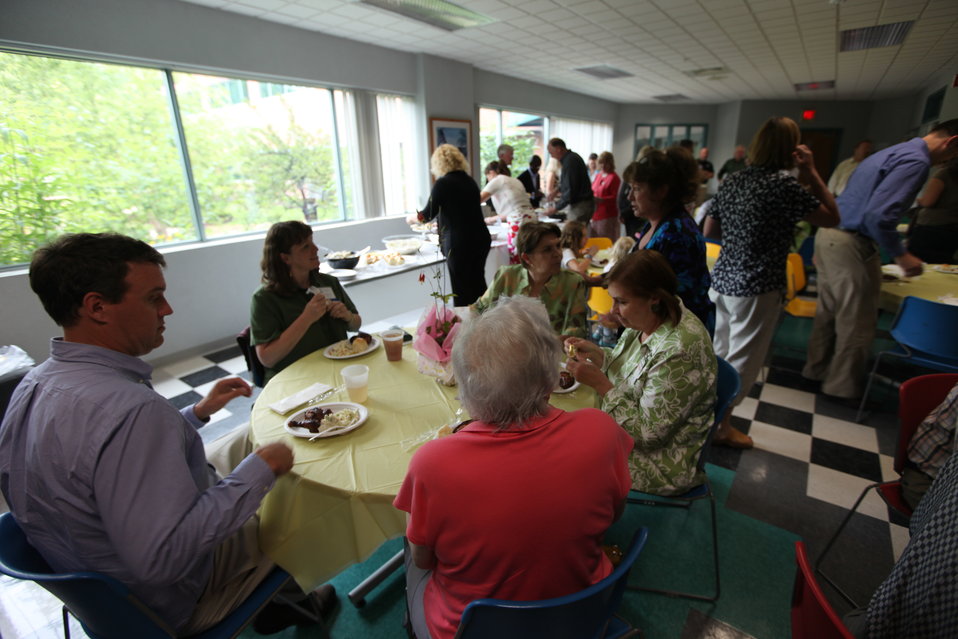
Northeast Region Employee Appreciation Awards

Luncheon